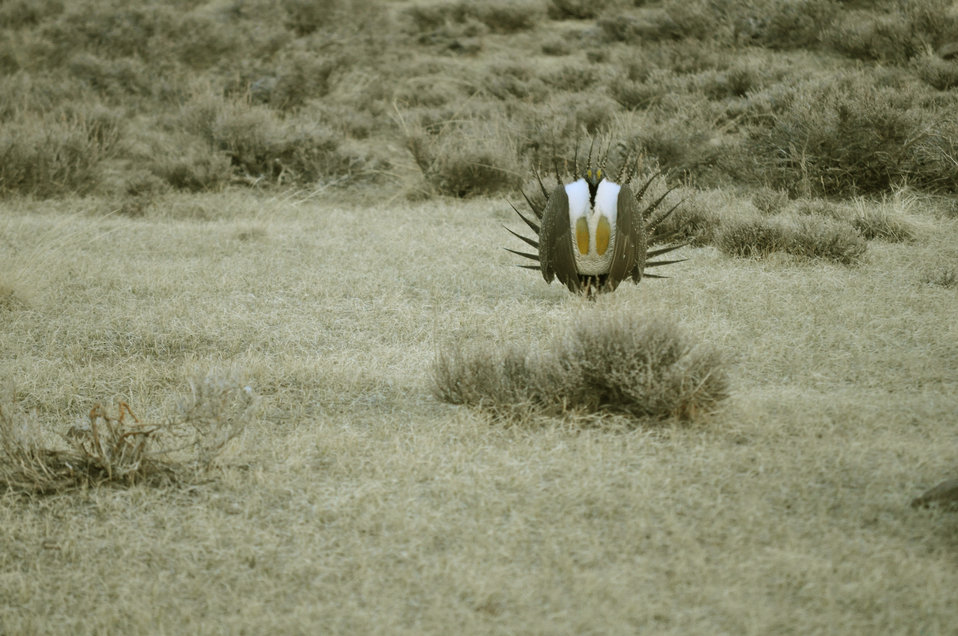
Male greater sage-grouse struts at lek (dancing or mating grounds) to attract females near Bodie, California.